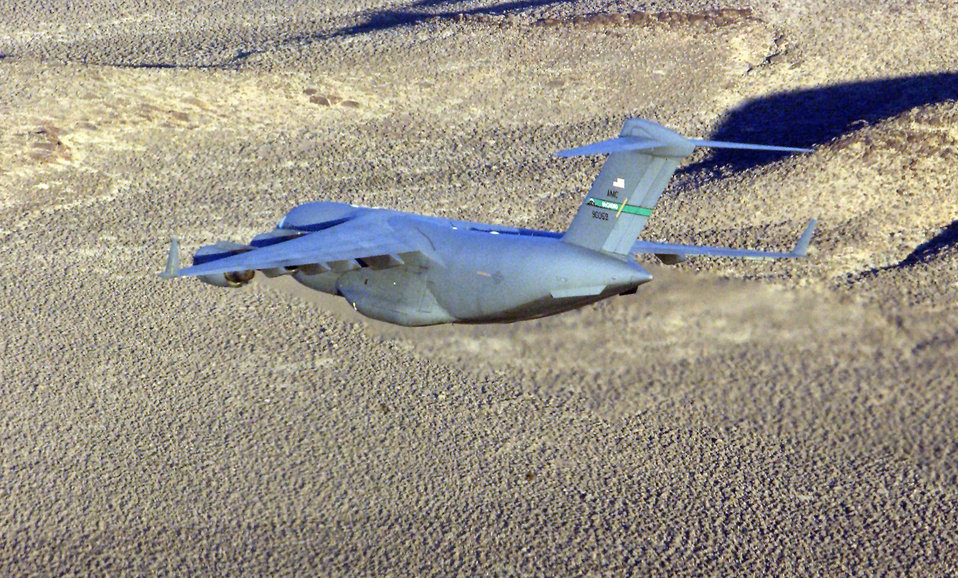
C-17 debuts

NELLIS AIR FORCE BASE, Nev. -- A C-17 Globemaster III flies over the range here during a mission-employment exercise Dec. 10. The two-week exercise brought students from the Air Force, Navy and German air force to participate in a series of realistic combat scenarios. This is the first year a C-17 has been included in the exercise.